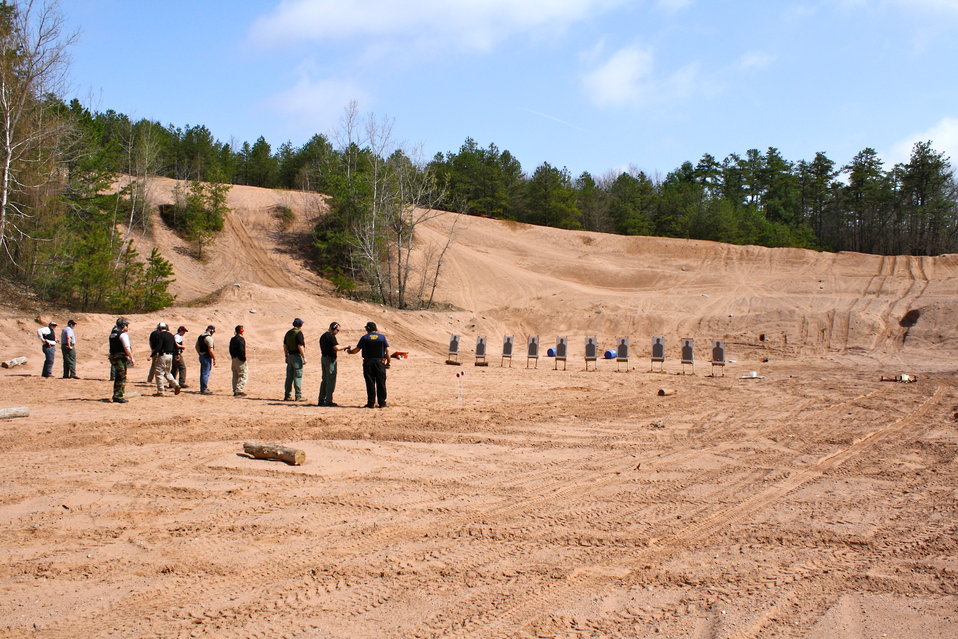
Target Practice

Law Enforcement target practice at outdoor shooting range in Glastonbury, CT.